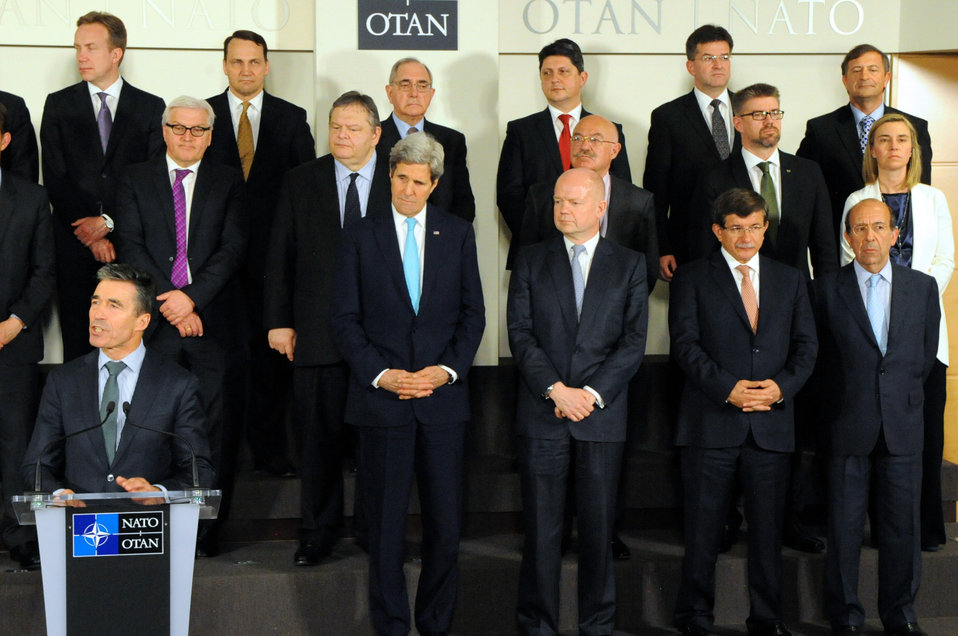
Secretary Kerry Listens as NATO Secretary General Rasmussen Marks Group's Growth

U.S. Secretary of State John Kerry listens as NATO Secretary General Anders Fogh Rasmussen marks the alliance's enlargement anniversaries during a ceremony at NATO Headquarters in Brussels, Belgium, on April 1, 2014.